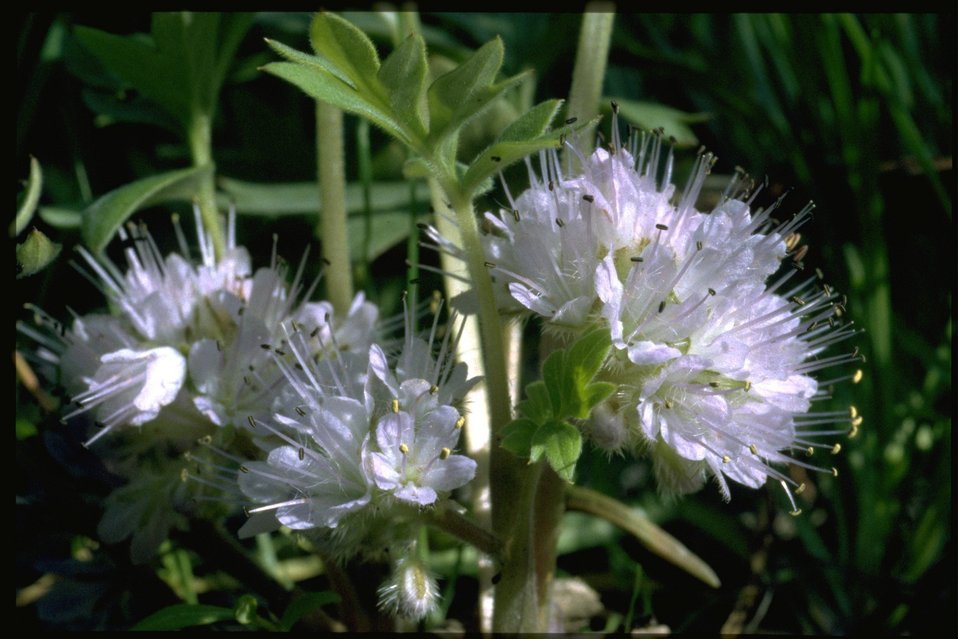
Closeup shot of Dwarf Waterleaf, Hyderophyllum Capitatum, wildflower.